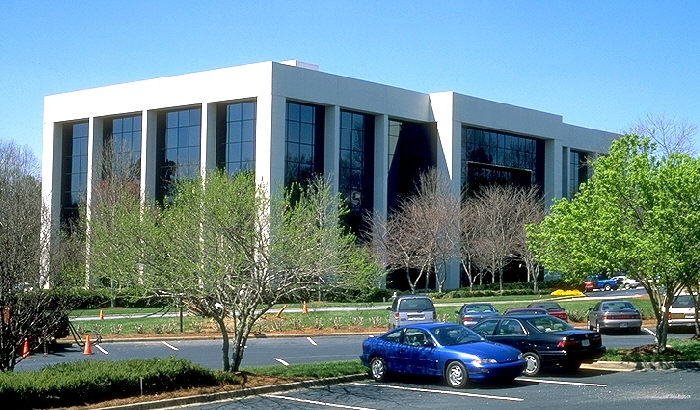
Williams Building, Koger Center.